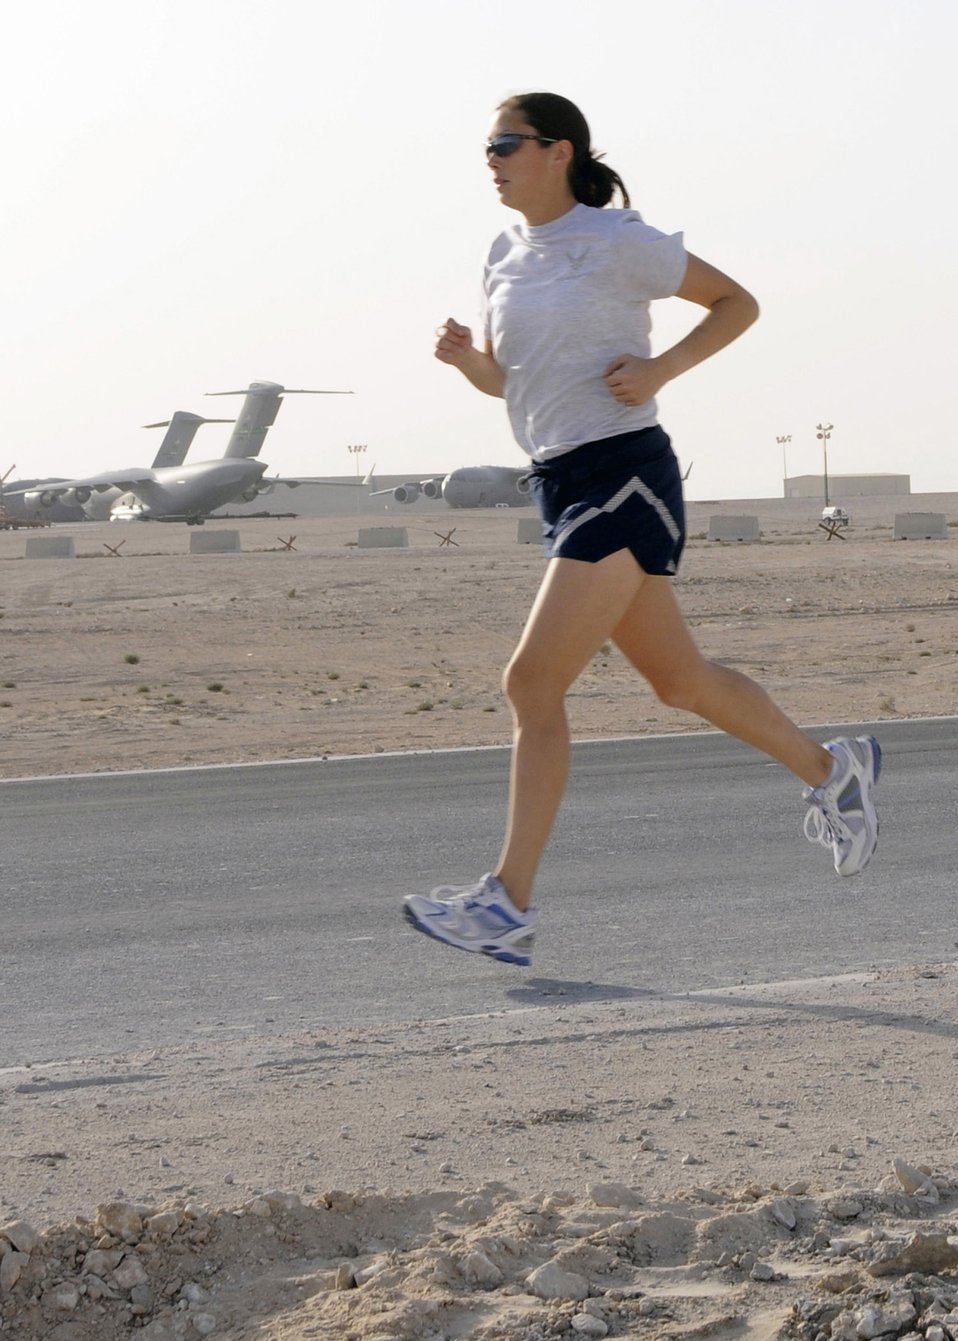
Mother daughter race together

1st Lt. Jessica Jessica Lopez trains for the L.A. Marathon from her deployed location Feb. 13 in Southwest Asia. After she received deployment orders and realized she would miss running the marathon stateside with her mother, Dawn, on March 2, the duo decided to run the marathon at the same time, 11 time zones apart. Lieutenant Lopez finished in 3:39.